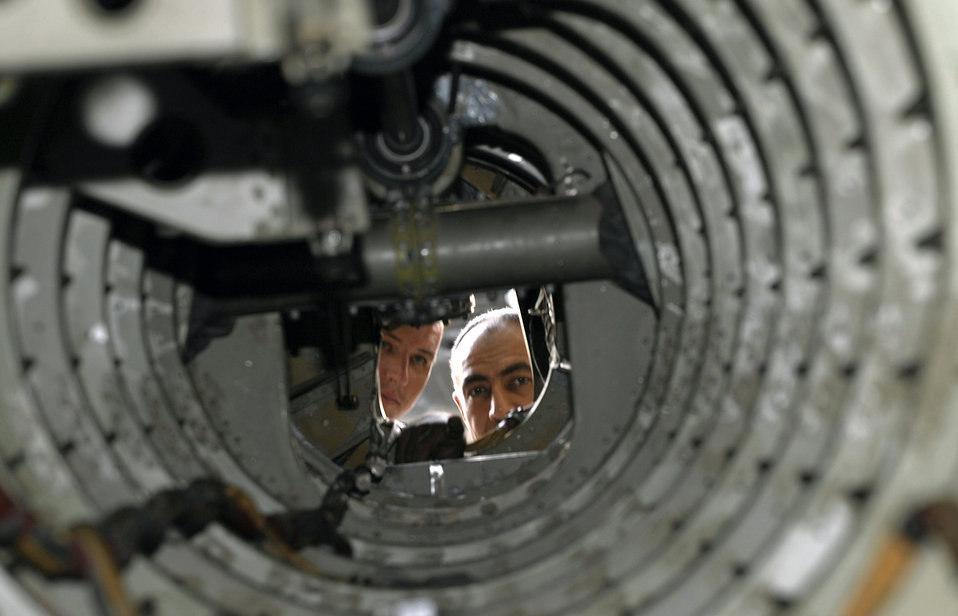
Iraqi airmen keep helicopter fleet flying

Tech. Sgt. Lee Everhart (left) and Iraqi air force Lt. Col. Auday Yasseu Yousif inspect the inside of a tail boom on a Mi-17 Hip helicopter Sept. 11 at Taji Air Base, Iraq. The Mi-17 had made a hard landing and struck its tail skid against the ground during a recent training mission, requiring close inspection of its tail section. Colonel Yousif is Iraqi air force Squadron 4 chief engineer. Sergeant Everhart, an Mi-17 air adviser with the 770th Air Expeditionary Advisory Squadron, is deployed from Robins Air Force Base, Ga. His hometown is Lexington, N.C.